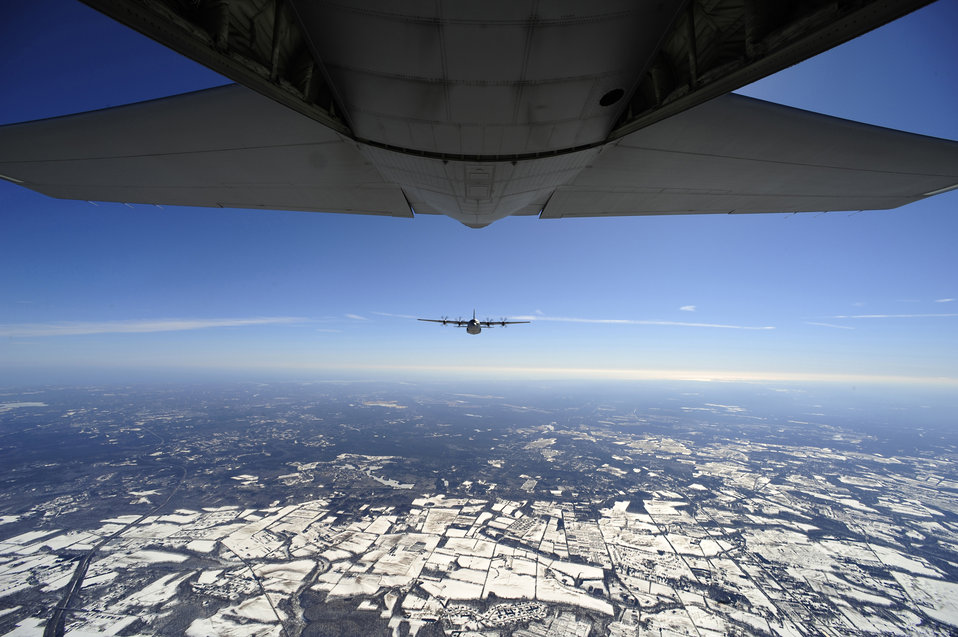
First MC-130J training program takes flight

An EC-130J Commando Solo from the 193rd Special Operations Squadron flown by Air Force Special Operations Training Center students class 1101 flies in formation Feb. 11, 2011, over Harrisburg, Pa., during a training sortie. Class 1101 is the first group of students to attend mission qualification training for the EC-130J that will replace all the E- and P-model aircraft within the next few years. The EC-130J is equipped with modern avionics and mission systems. It is expected to provide specialized mobility to combatant commanders.